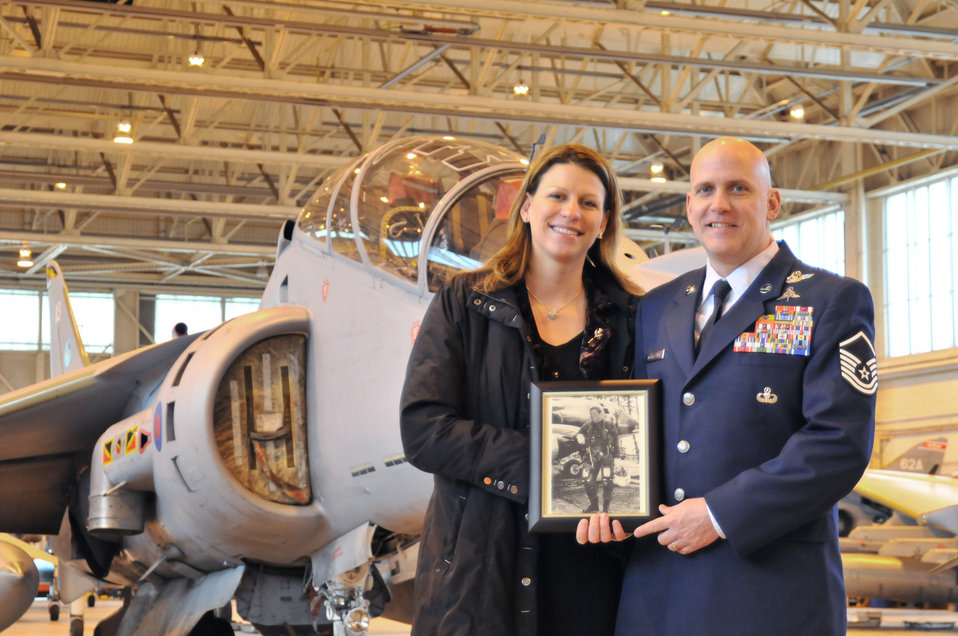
MSgt Distelweig

Master Sgt. Louis Distelsweig and his wife, Eve, pose with a picture of Sergeant Distelsweig's father, Capt. Louis Distelsweig Jr., in front of a Royal Air Force Harrier jet Jan. 11, 2011, at Royal Air Force Cottesmore, England. Captain Distelsweig was a decorated pilot who perished in an aircraft accident in 1970 while serving as an exchange pilot with the Royal Air Force.